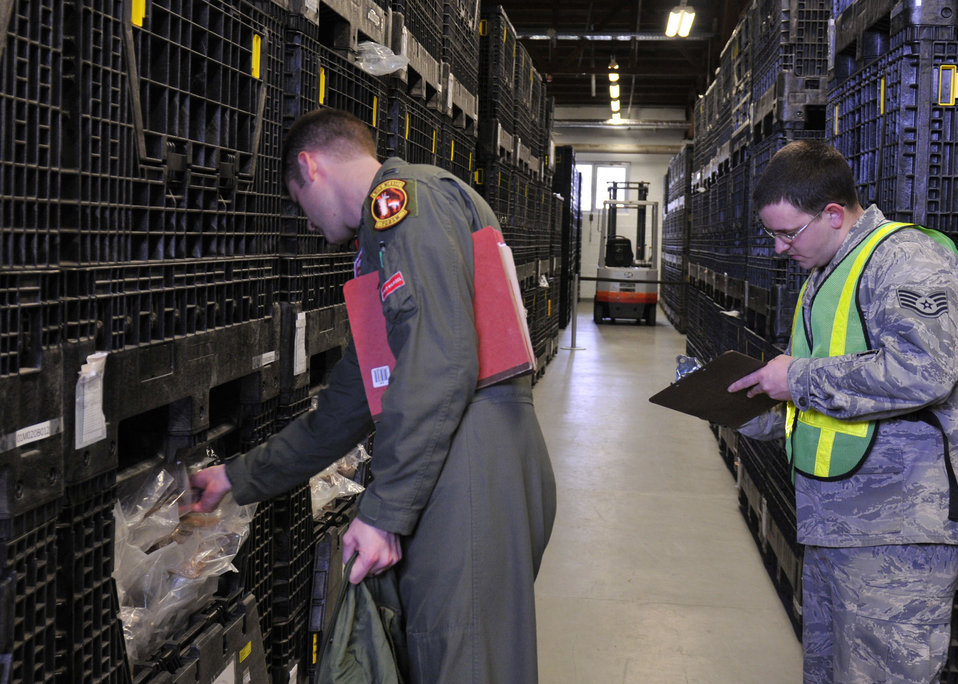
Operation Odyssey Dawn

SPANGDAHLEM AIR BASE, Germany?A 52nd Logistics Readiness Squadron staff sgt. issues gear to a 480th Fighter Squadron F-16 Fighting Falcon pilot in preparation for his deployment to support Operation Odyssey Dawn March 18. Joint Task Force Odyssey Dawn is the U.S. Africa Command task force established to provide operational and tactical command and control of U.S. military forces supporting the international response to the unrest in Libya and enforcement of United Nations Security Council Resolution (UNSCR) 1973. UNSCR 1973 authorizes all necessary measures to protect civilians in Libya under threat of attack by Qadhafi regime forces. JTF Odyssey Dawn is commanded by U.S. Navy Admiral Samuel J. Locklear, III.